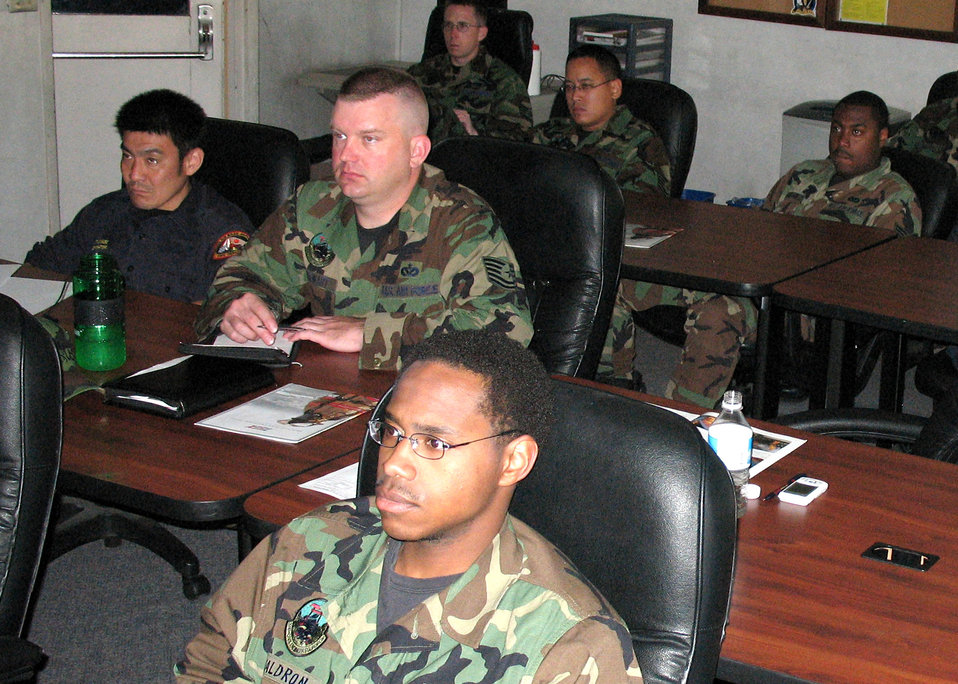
Yokota becomes Pacific training hub for firefighters

Firefighters sit through a training session explaining how they will soon be able to train themselves by partnering with the Texas Engineering Extension Institute May 7 at Yokota Air Base, Japan. The partnership will save thousands of dollars by allowing Yokota AB Airmen to train 10 firefighters for the same price it would cost to send one to school in the United States.